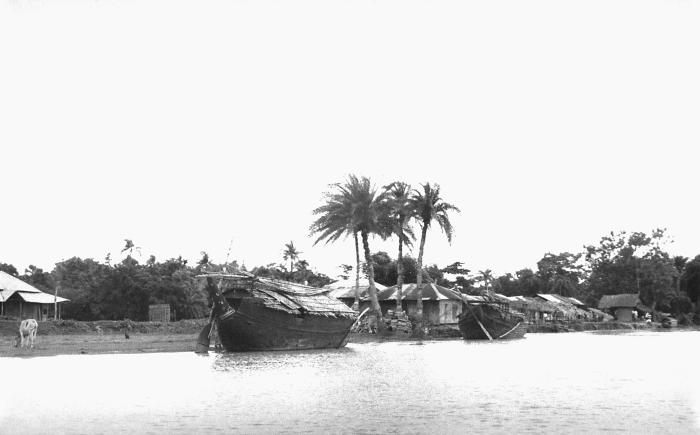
This was a large country boat that was anchored on the banks of a Bangladesh river. This photograph provided by Dr. Stan Foster, and captured by Pierre Claquin, M.D., B.A.C., who at the time was a member of the World Health Organization's Smallpox Eradication Program. It was part of a series photographed by former E.I.S. officer, Stanley O. Foster M.D., M.P.H., and was one of a series entitled 'The Story of One Smallpox Jeep', which depicted the travails faced by the jeep, and its occupants of public health practitioners, as they road through the Bangladesh countryside in an attempt to eradicate smallpox from the country.